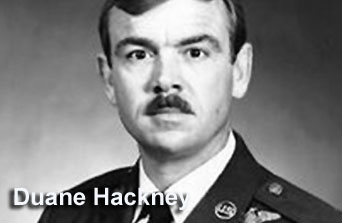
Chief Master Sgt. Duane Hackney was the first living enlisted recipient of the Air Force Cross during the Vietnam War. The three others before him were awarded the medal posthumously.